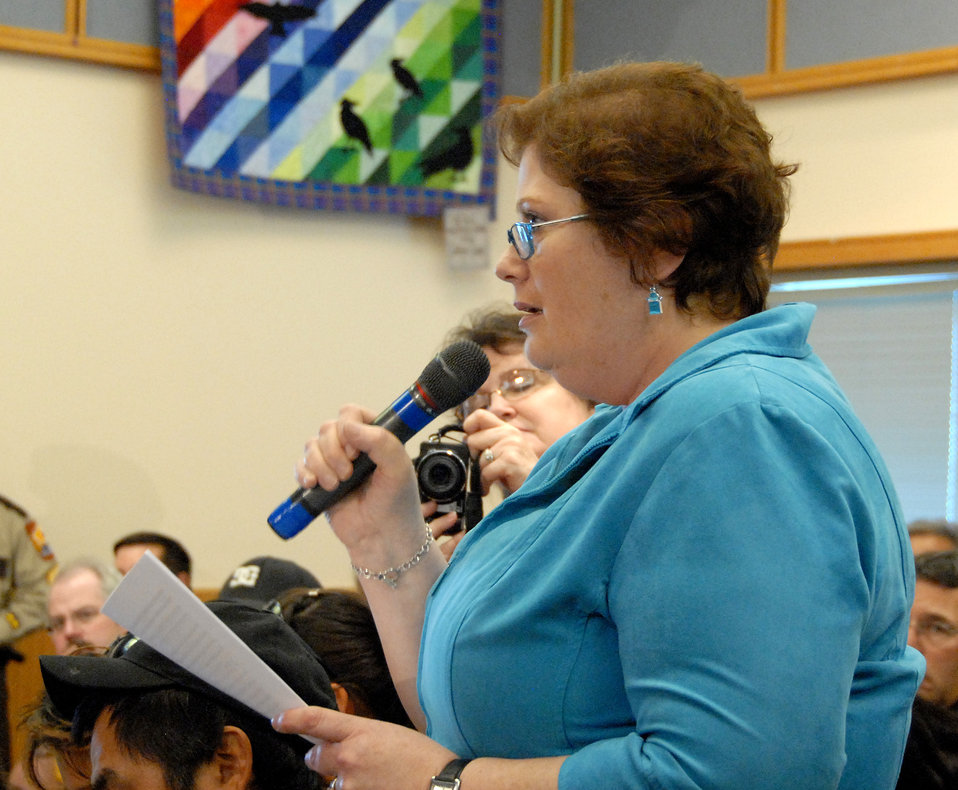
Rural Tour 0147

Rural Tour Alaska Aug 2009